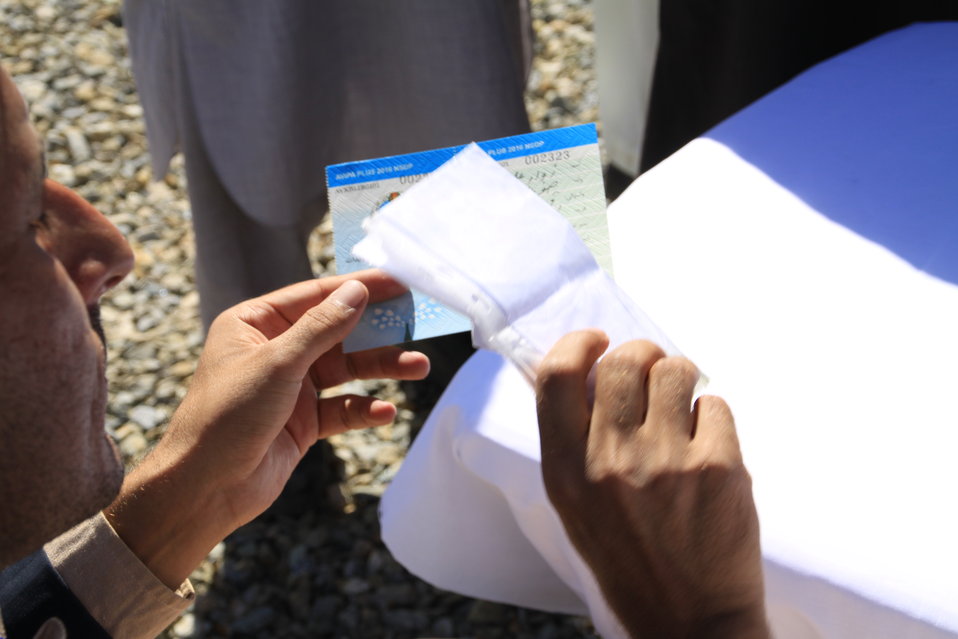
AVIPA Plus Wheat Seed Distribution 101005

US Ambassador Karl Eikenberry and USAID Acting Mission Director Kevin Brownawell joined the Minister of Agriculture, Irrigation and Livestock, H.E. Minister Mohammed Rahimi in signing a Memorandum of Understanding and distributing vouchers to area farmers for wheat and fertilizer.

US Ambassador Karl Eikenberry and USAID Acting Mission Director Kevin Brownawell joined the Minister of Agriculture, Irrigation and Livestock, H.E. Minister Mohammed Rahimi in signing a Memorandum of Understanding and distributing vouchers to area farmers for wheat and fertilizer.

US Ambassador Karl Eikenberry and USAID Acting Mission Director Kevin Brownawell joined the Minister of Agriculture, Irrigation and Livestock, H.E. Minister Mohammed Rahimi in signing a Memorandum of Understanding and distributing vouchers to area farmers for wheat and fertilizer.